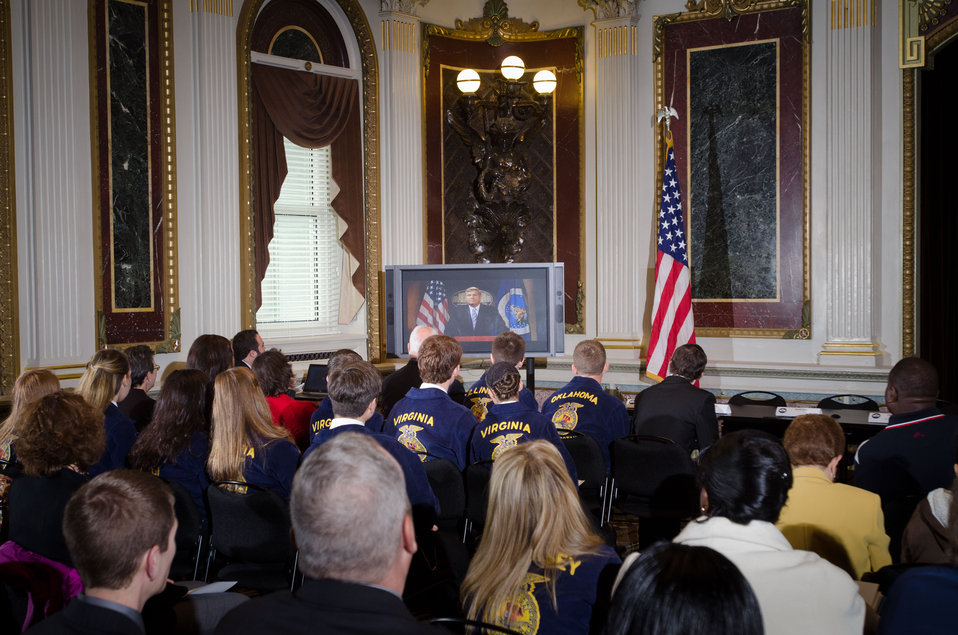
Agriculture Secretary Tom Vilsack provides opening remarks, via video recording, to the 12 Champions of Change recipients being recognized at the Executive Office Building in Washington, D.C. on Tuesday, Oct. 9, 2012. The Champions of Change program was created to honor ordinary Americans doing great work in their communities. Each week, a different sector is highlighted and groups of Champions, ranging from educators to entrepreneurs to community leaders, are recognized for the work they are doing to serve and strengthen their communities.